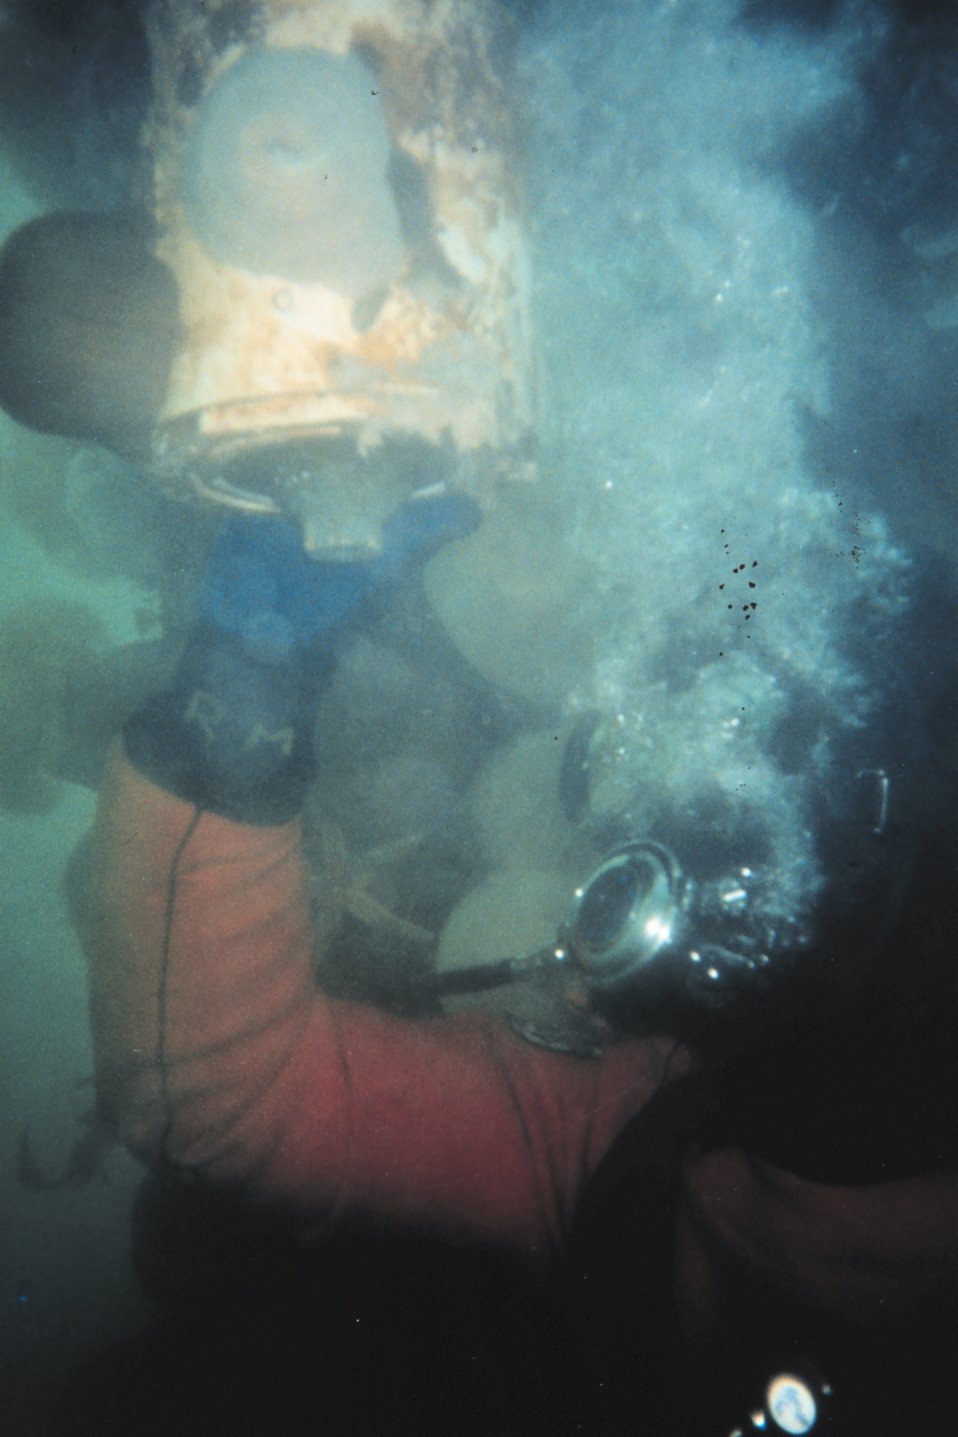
Inspecting the Cherry Point tide gage orifices.